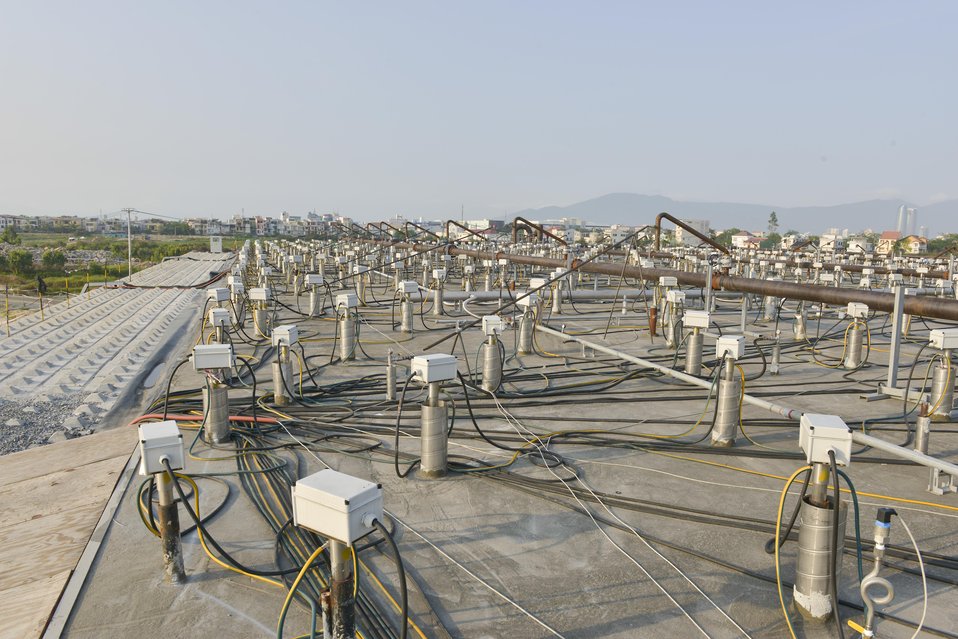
The containment and treatment structure at the Danang Airport Project site.

Heating elements have been installed into the heater wells that are drilled throughout the containment structure, and power cables have been installed to connect the treatment system to the electrical substations adjacent to the containment structure.

March 24, 2014.